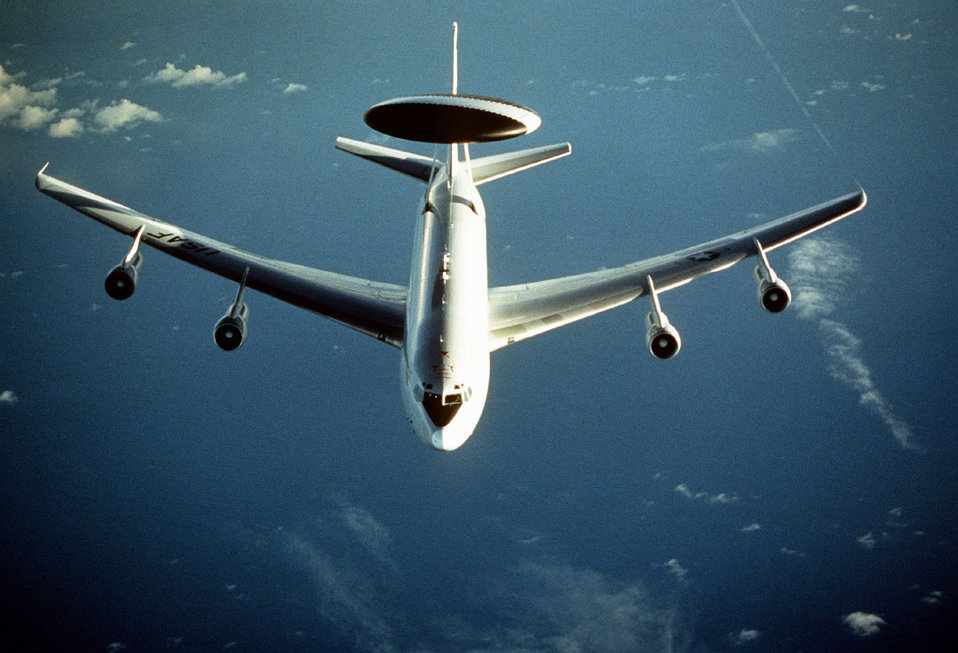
E-3

FILE PHOTO -- The E-3 Sentry is a modified Boeing 707/320 commercial airframe with a rotating radar dome. The dome is 30 feet in diameter, 6 feet thick and is held 11 feet above the fuselage by two struts. It contains a radar subsystem that permits surveillance from the Earth's surface up into the stratosphere, over land or water. The radar has a range of more than 200 miles for low-flying targets and farther for aerospace vehicles flying at medium to high altitudes.